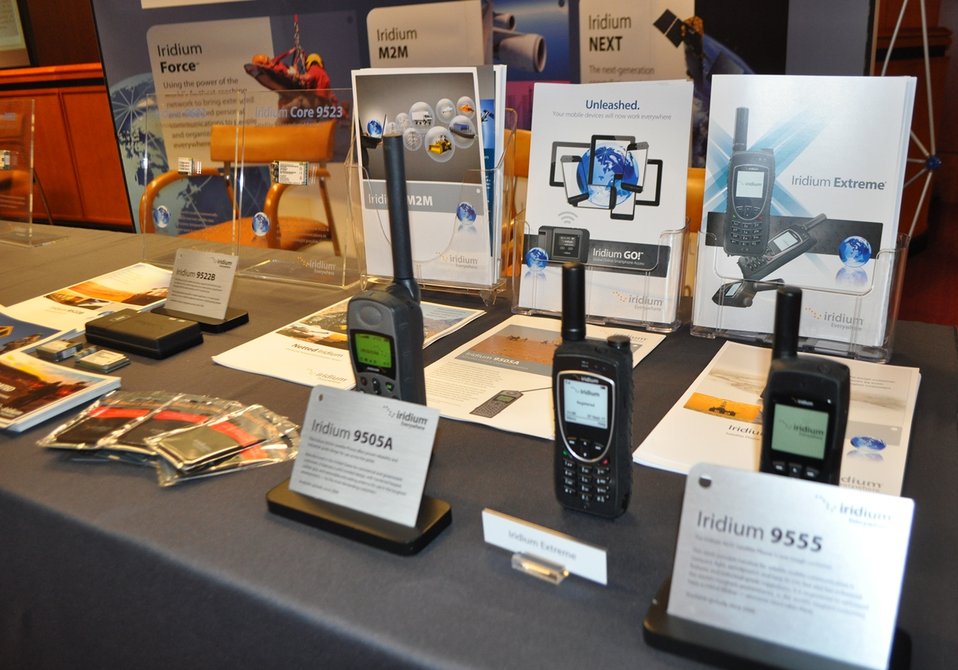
5.14.2014 Satellite Technology Demonstration

Satellite Technology Demonstration at FCC